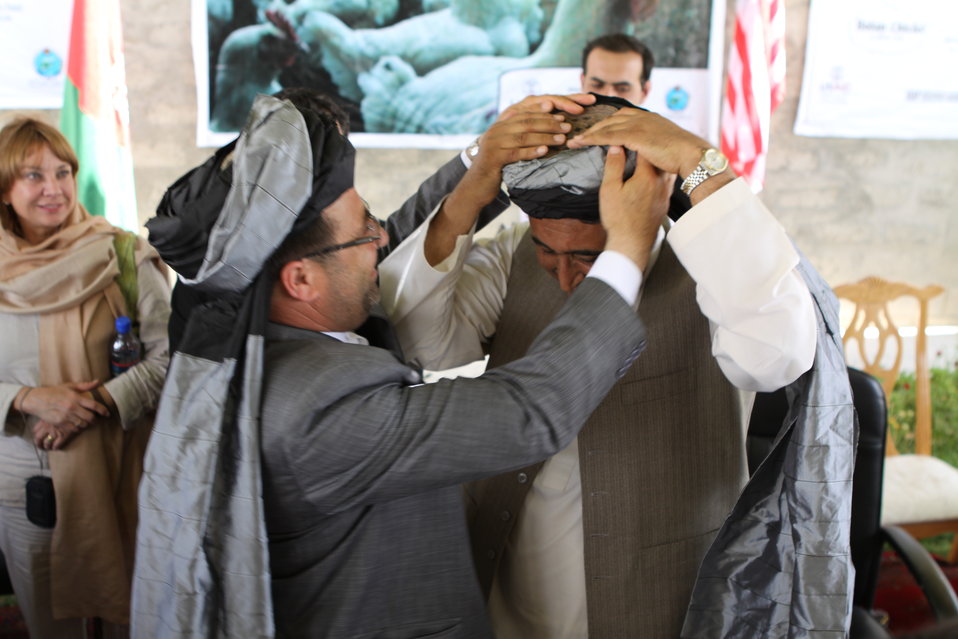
Bolan Poultry Farm